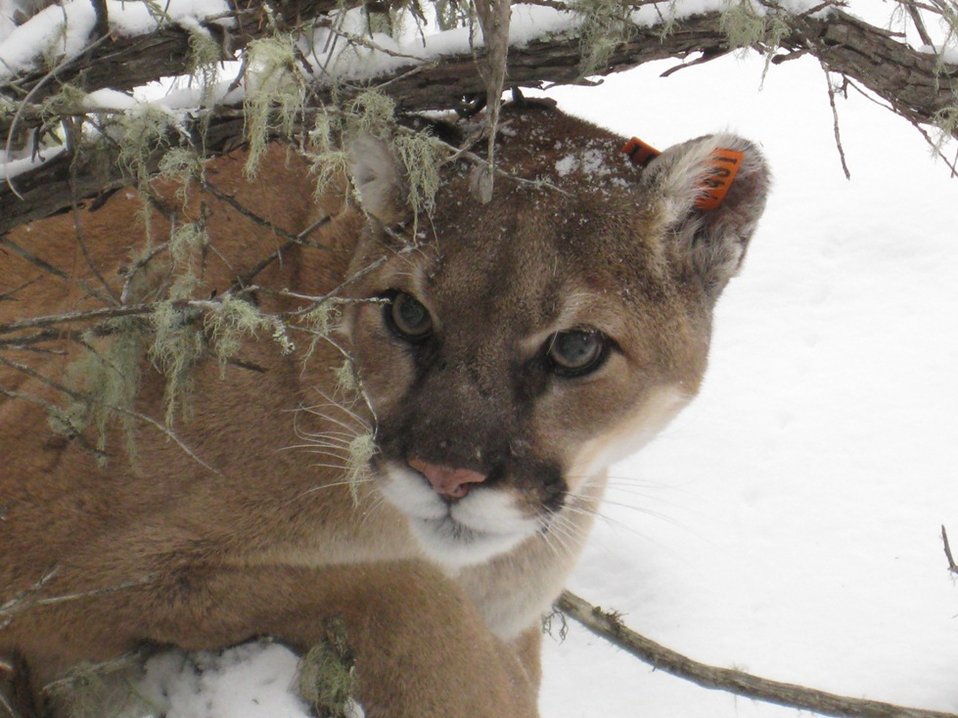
Mountain Lion

Mountain lions are present on the west end of Charles M. Russell National Wildlife Refuge and a study is currently underway to learn more about these big cats.